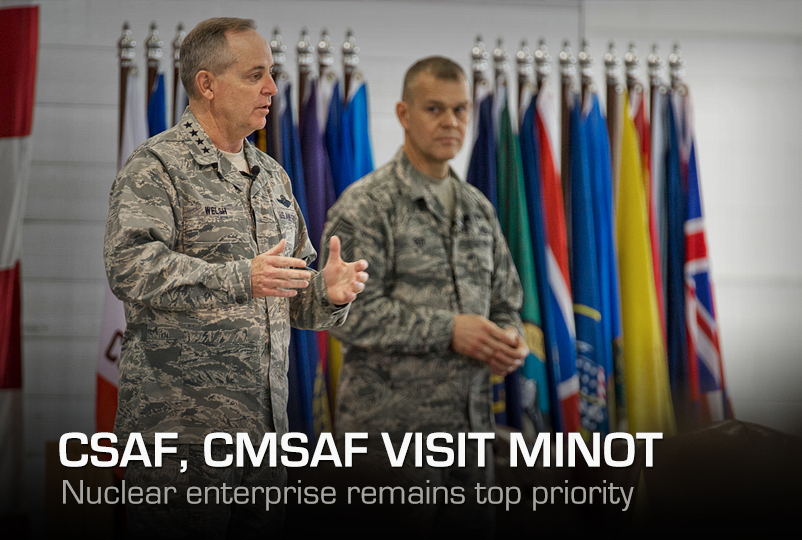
CSAF, CMSAF visit Minot